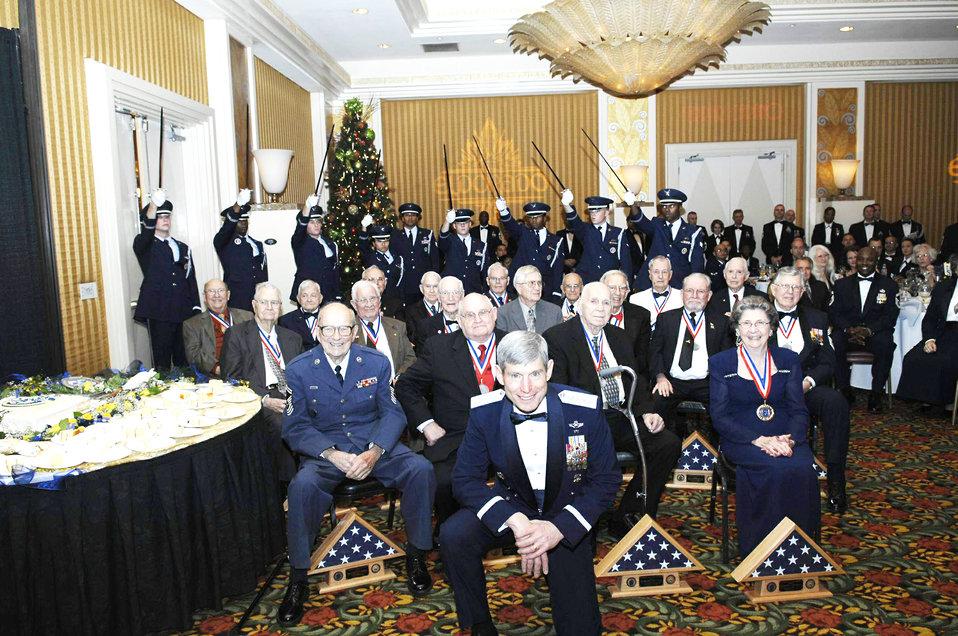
Barksdale officials host Charter Chief golden anniversary

Air Force Chief of Staff Gen. Norton Schwartz joins 18 Charter Chiefs, the first Airmen promoted to the rank of chief master sergeant in the Air Force Dec. 1, 2009, at Barksdale Air Force Base, La. Dec. 1 marked the 50th anniversary of the first 625 Airmen to be promoted to the rank of chief master sergeant.